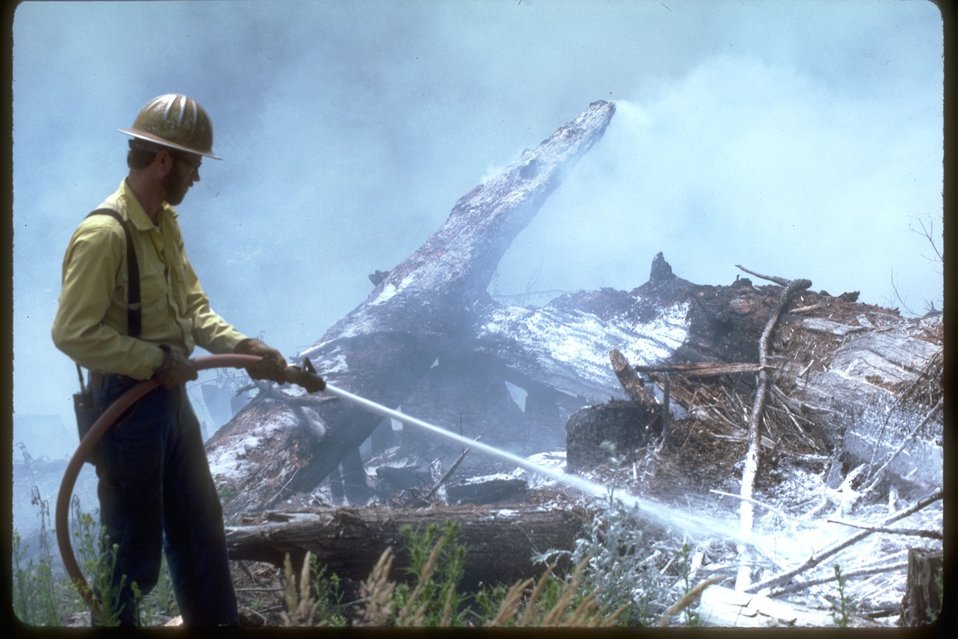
Mop up of a prescribed fire.